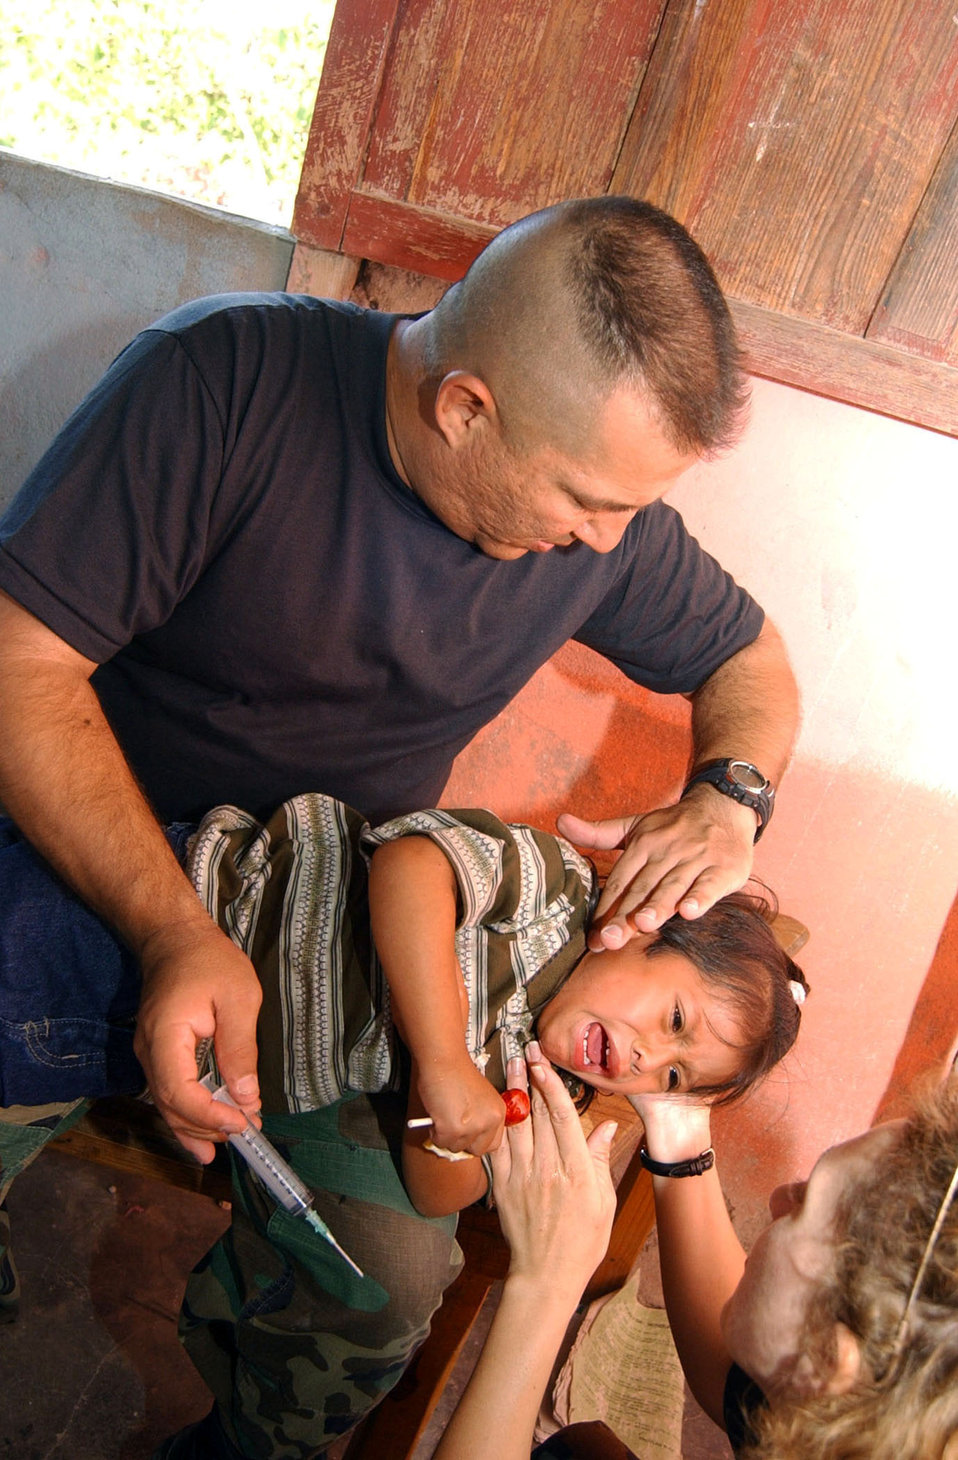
Medical element helps Honduran village

Tech. Sgt. Mary Preolette (right) tries to console a child while Tech. Sgt. James Luna irrigates his ear during a Medical Readiness Training Exercise June 29 in El Horno, Honduras. The medical team saw 1,072 patients during the two-day mission. Sergeants Preolette and Luna are both assigned to the Medical Element at Soto Cano Air Base, Honduras.